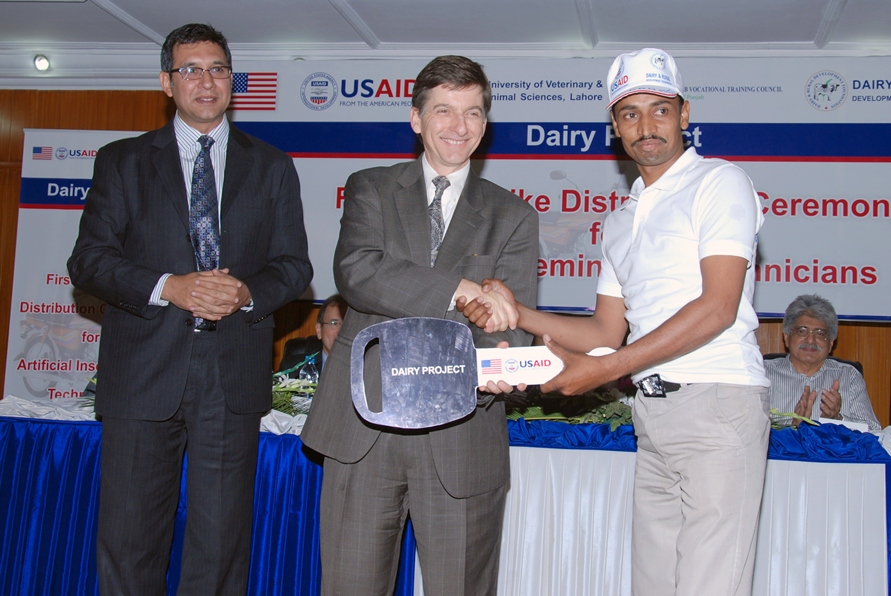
USAID Mission Director Dr. Andrew Sisson presenting motorcycle keys to a successfull AI technician 4